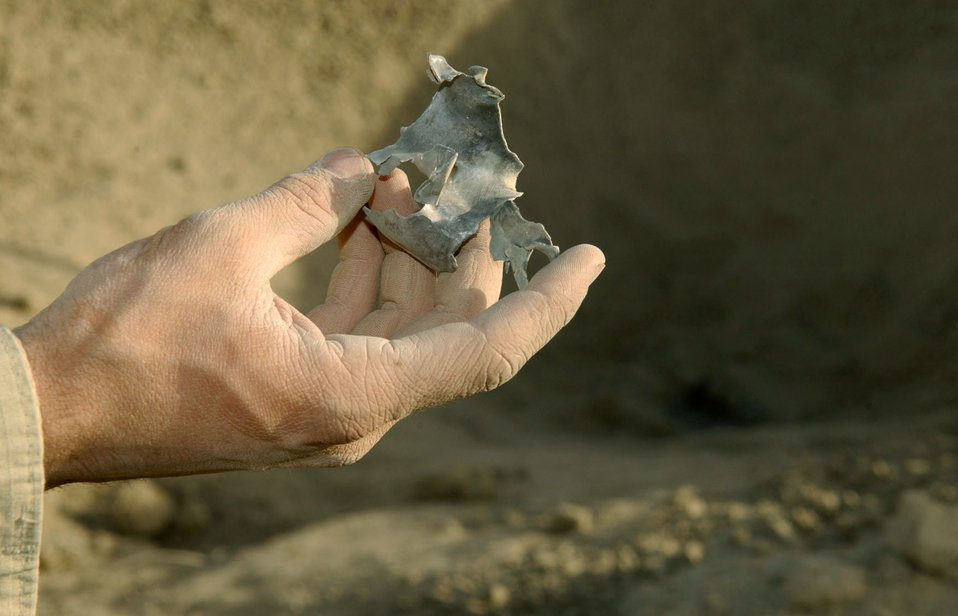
Blowing stuff up for safety's sake

BAGRAM AIR BASE, Afghanistan -- Staff Sgt. Michael, whose last name is omitted for security reasons, holds what is left of some unexploded ordnance. Sergeant Michael is an explosive ordnance disposal technician with the 455th Civil Engineer Flight here. He is deployed from Elmendorf Air Force Base, Alaska, supporting Operation Enduring Freedom.